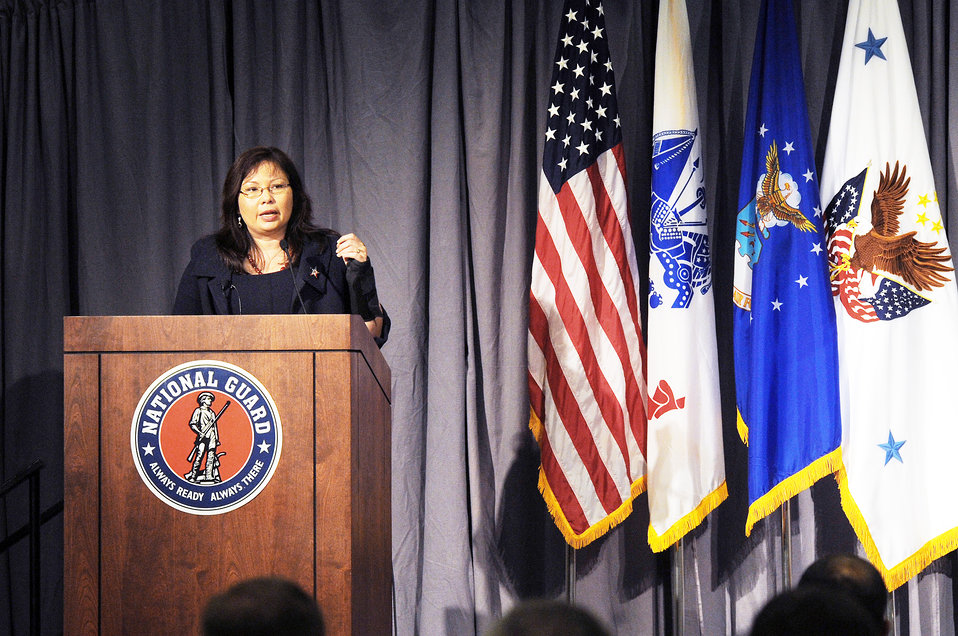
New perspective improves VA programs

Tammy Duckworth, the assistant secretary of public and intergovernmental affairs for the Department of Veterans Affairs, speaks at the 2009 National Guard Bureau Public Affairs Training Workshop Oct. 27, 2009, in Landsdowne, Va. Ms. Duckworth addressed many of the recent changes made at the VA including a streamlined process for servicemembers to receive care, additional clinics, advancements in care for women and electronic medical records designed to follow the servicemember throughout his or her career.